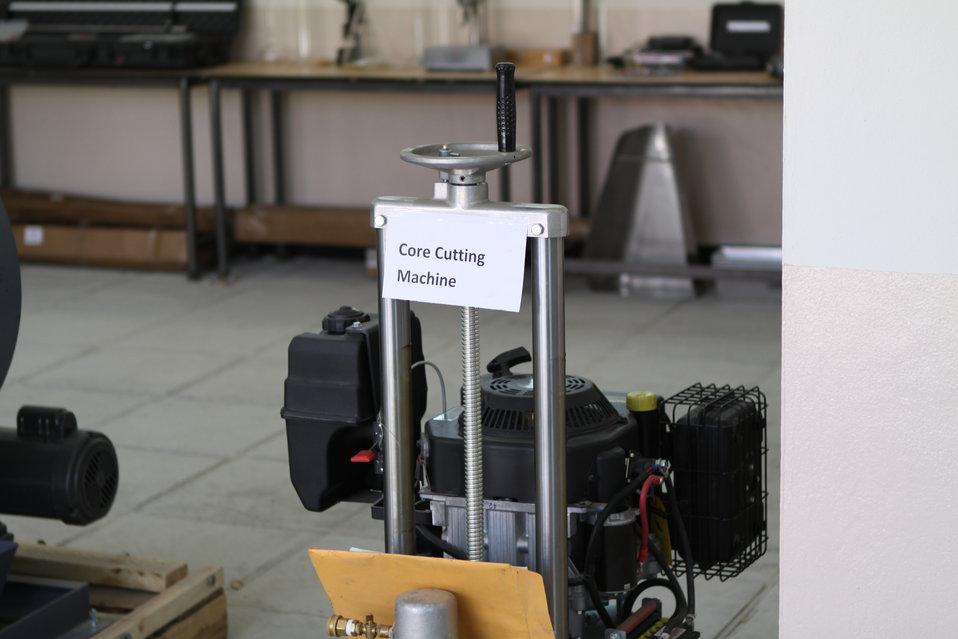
100522 ATVI Graduation 003